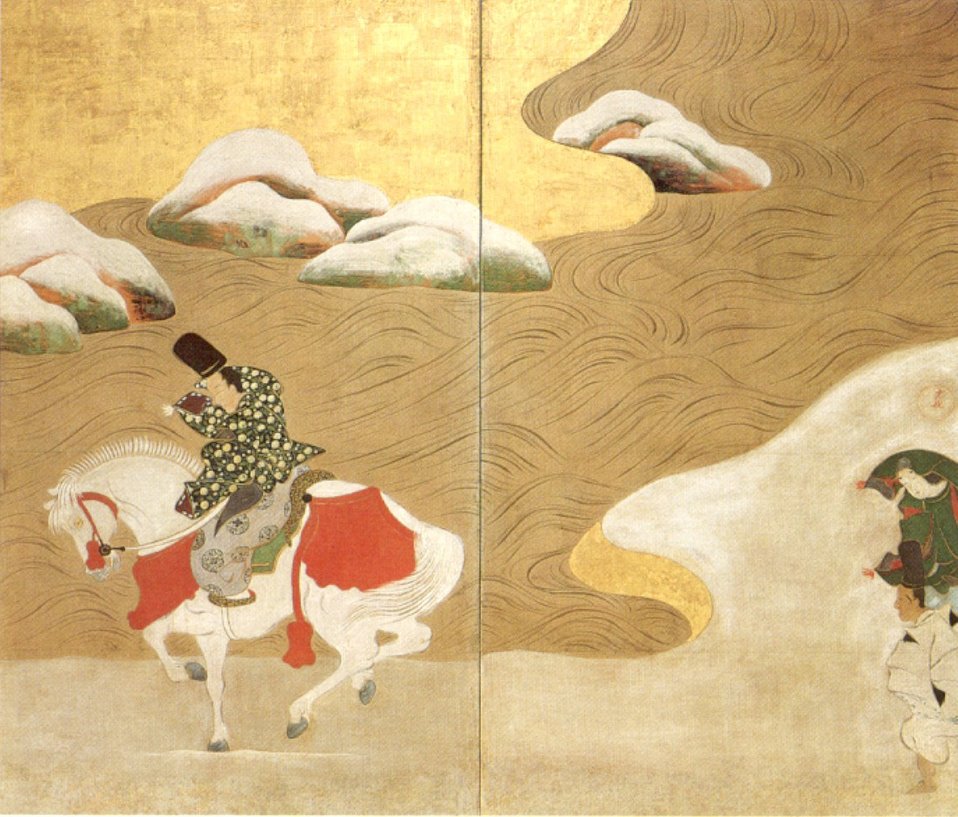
Crossing to Sano, Japanese two-panel screen, 18th century, ink, color and gold leaf on paper, Honolulu Academy of Arts